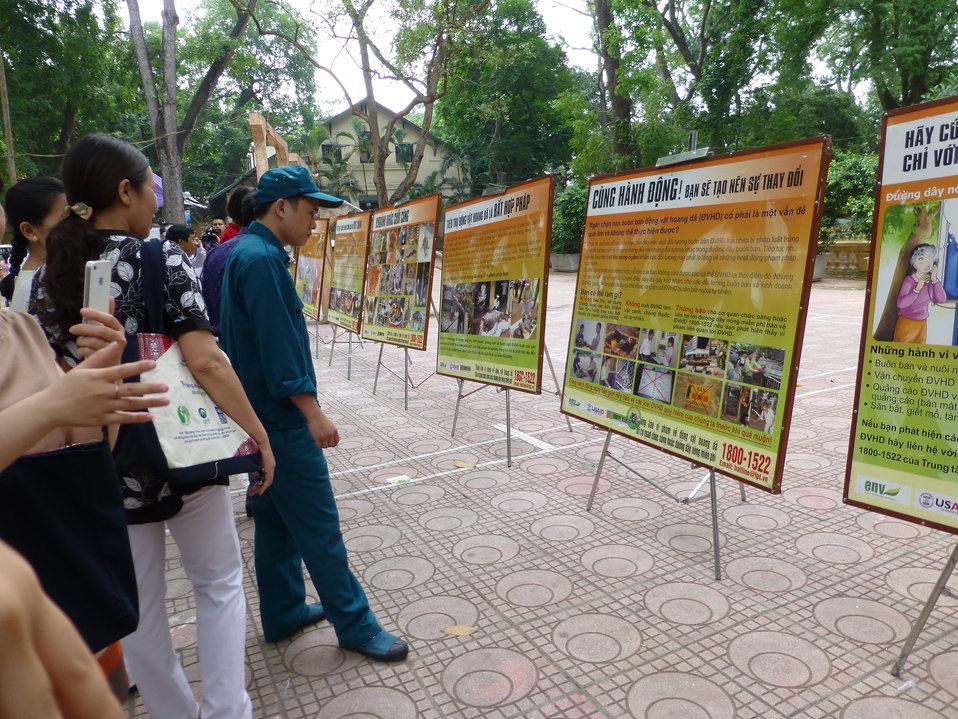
USAID Supports International Day for Biological Diversity in Hanoi